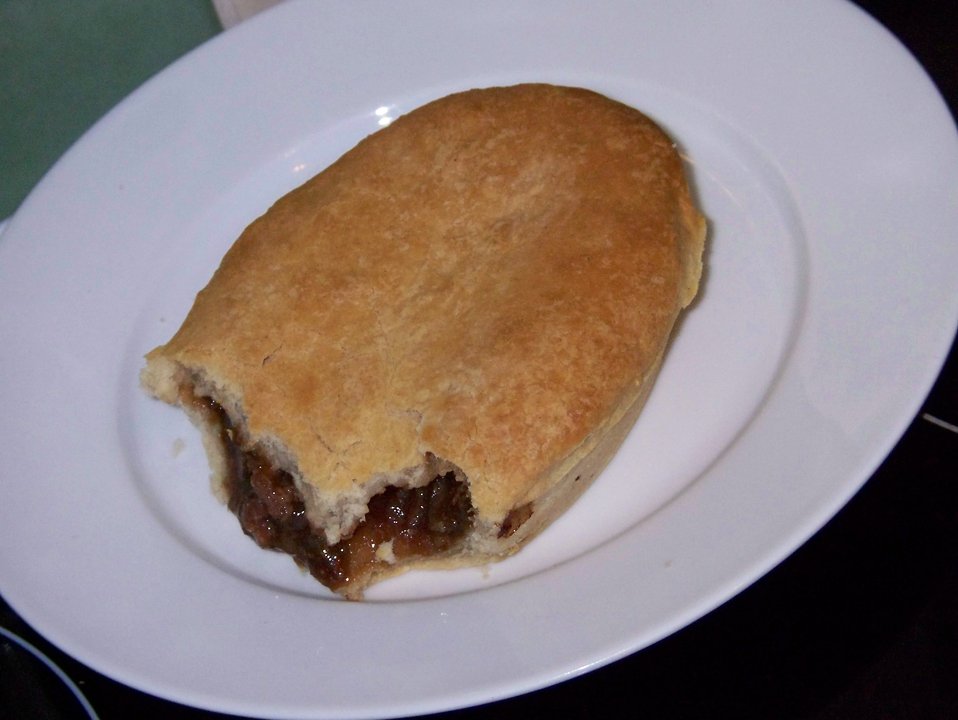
A partially consumed Clark's Pie